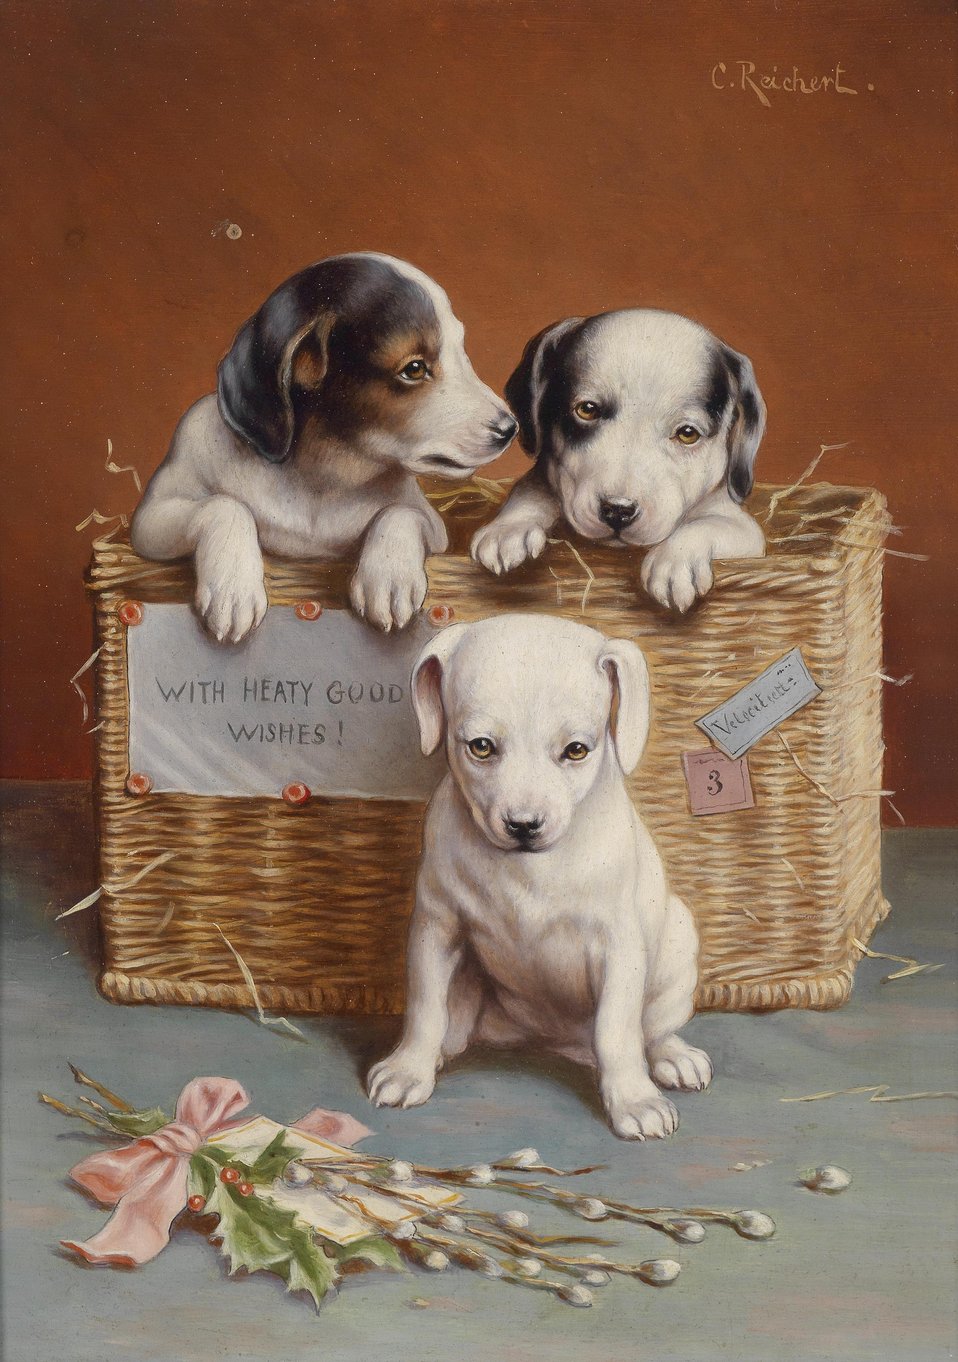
'With heaty good wishes' (sic!), signiert, C. Reichert, Öl auf Holz, 31 x 23 cm